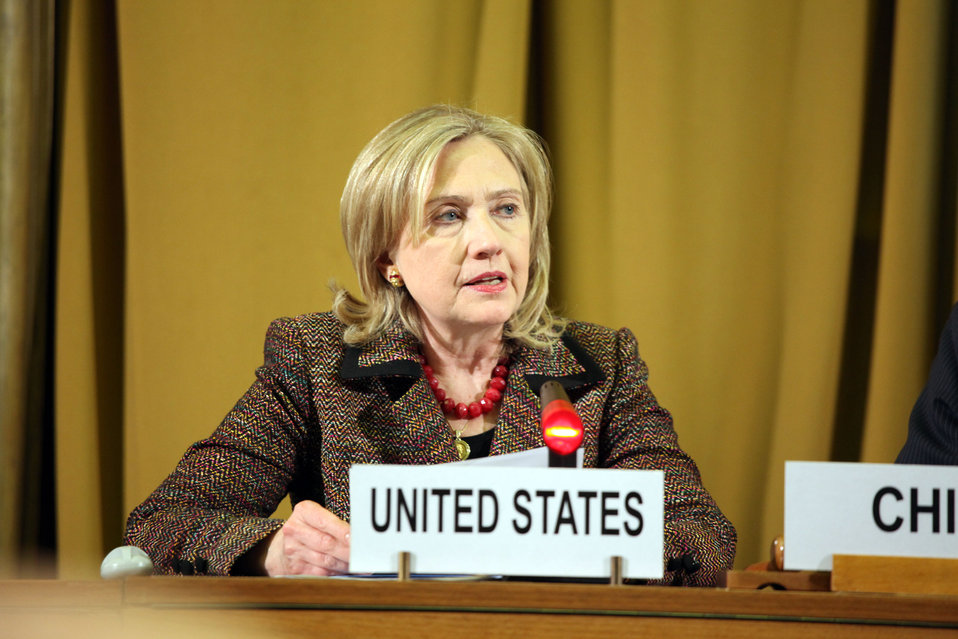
Secretary Clinton Participates in the Conference on Disarmament

U.S. Secretary of State Hillary Rodham Clinton participates in the Conference on Disarmament at the United Nations Office at Geneva, Switzerland, on February 28, 2011.